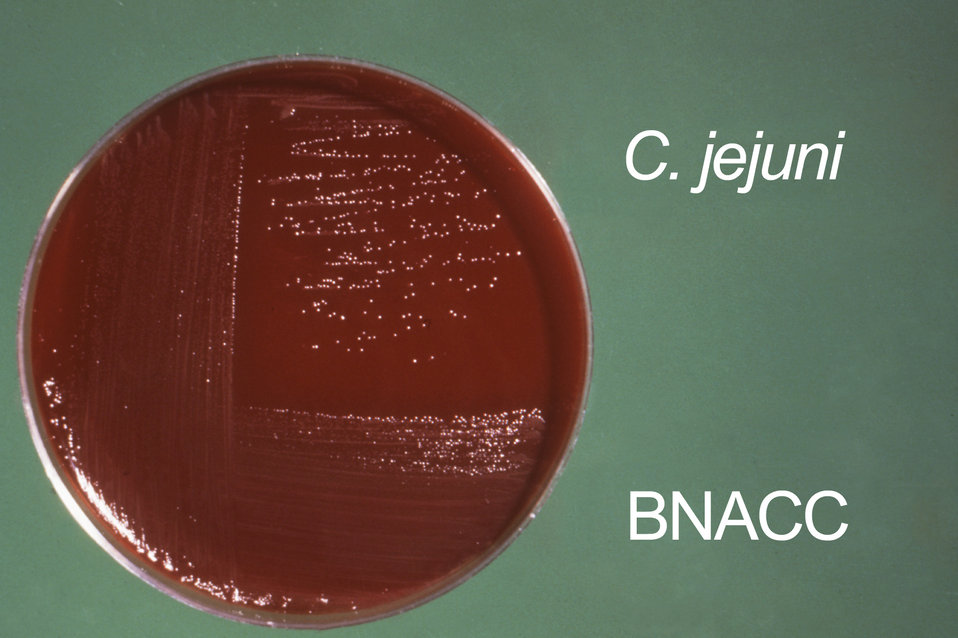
This Campylobacter fetus (C. fetus ss. jejuni) culture was grown on Skirrow's and Butzler's medium.